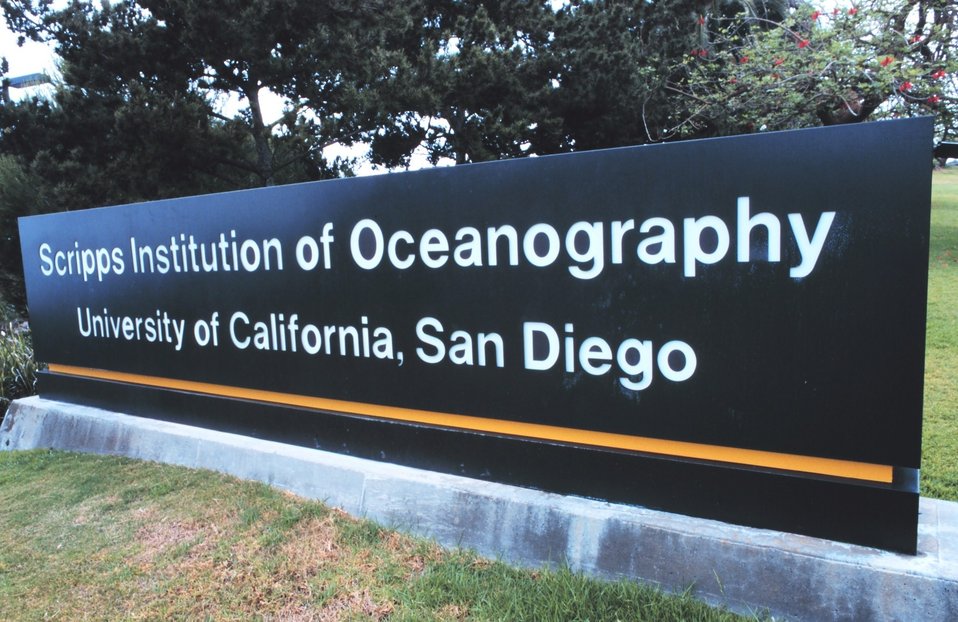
The entrance to Scripps Institution of Oceanography